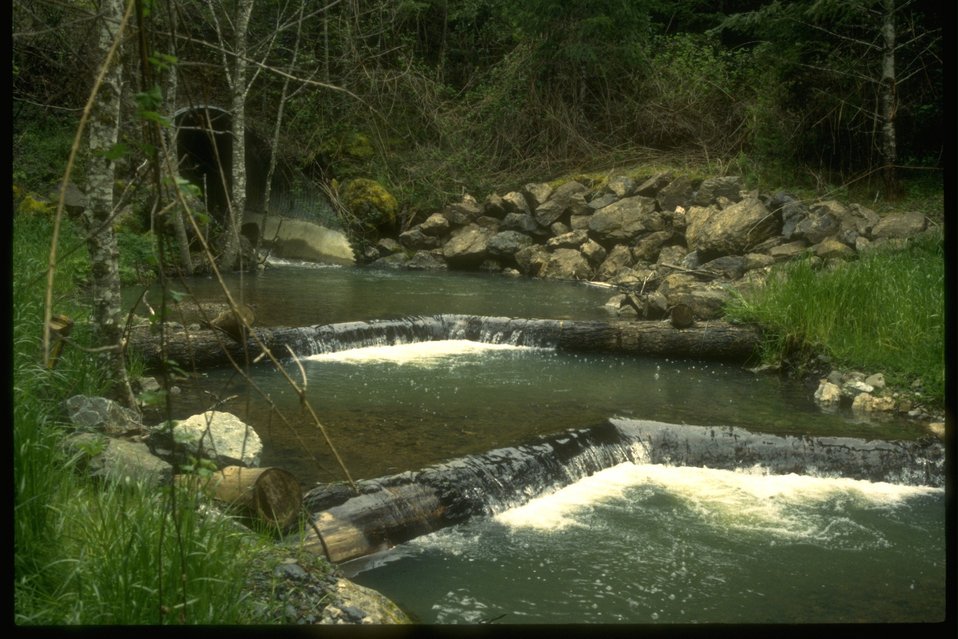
V-dams in stream.